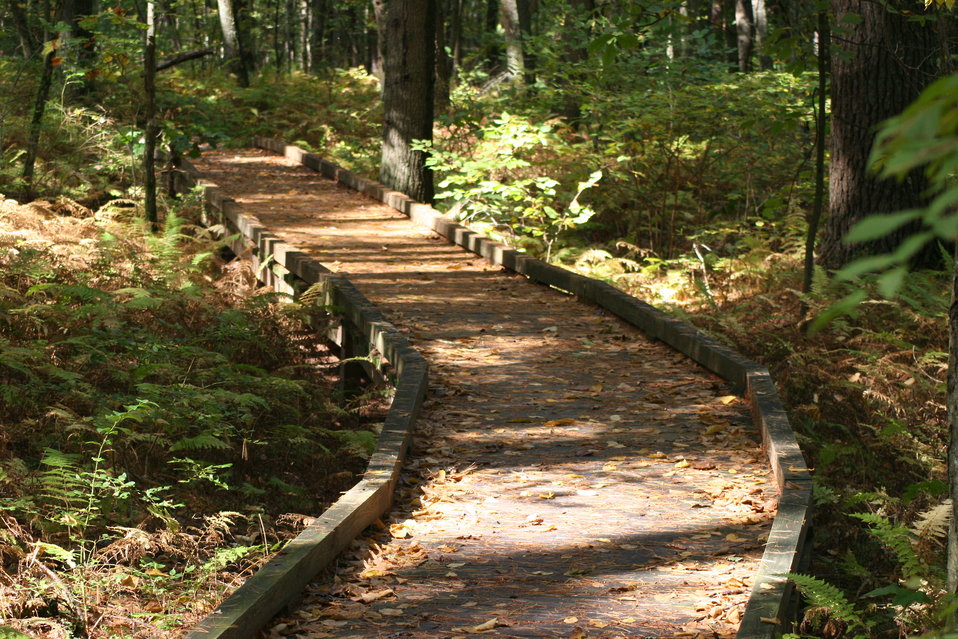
Peverly Pond Trail at Great Bay National Wildlife Refuge, Newington, NH.